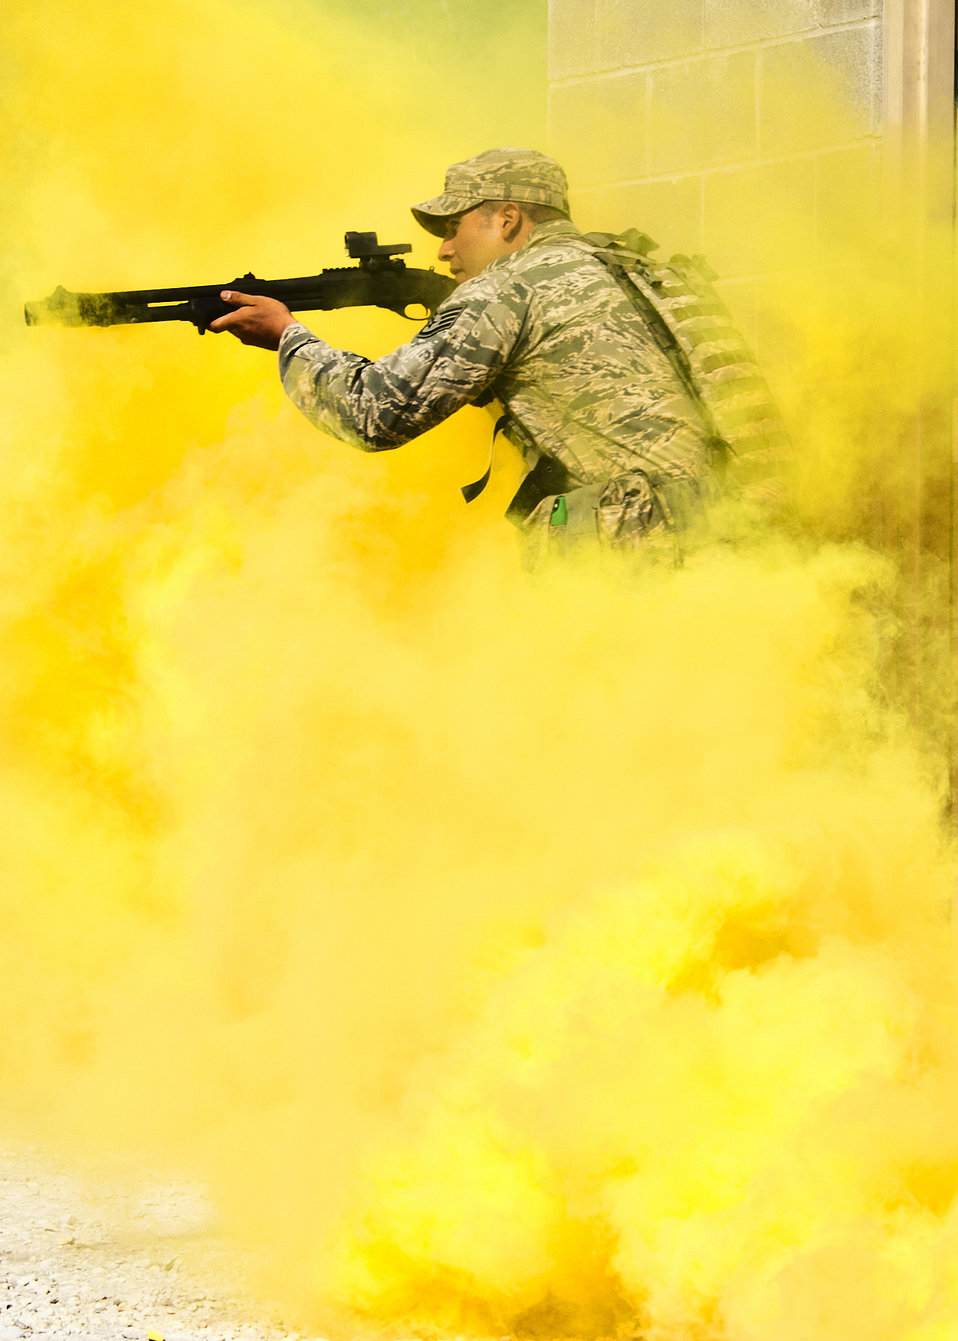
We're on the move...

Staff Sgt. Geovanii Pacheco leads his team out of a building May 6, 2011, during an assault demonstration by Airmen with the 96th Ground Combat Training Squadron at Eglin Air Force Base, Fla.